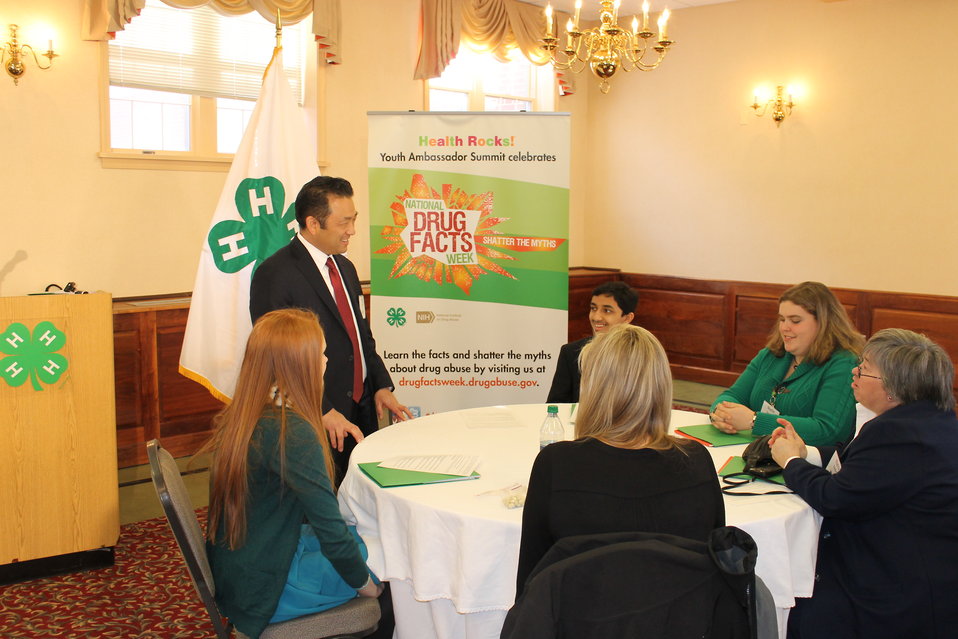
4-H Event

National 4-H Council Hosts Youth Summit to Celebrate National Drug Facts Week